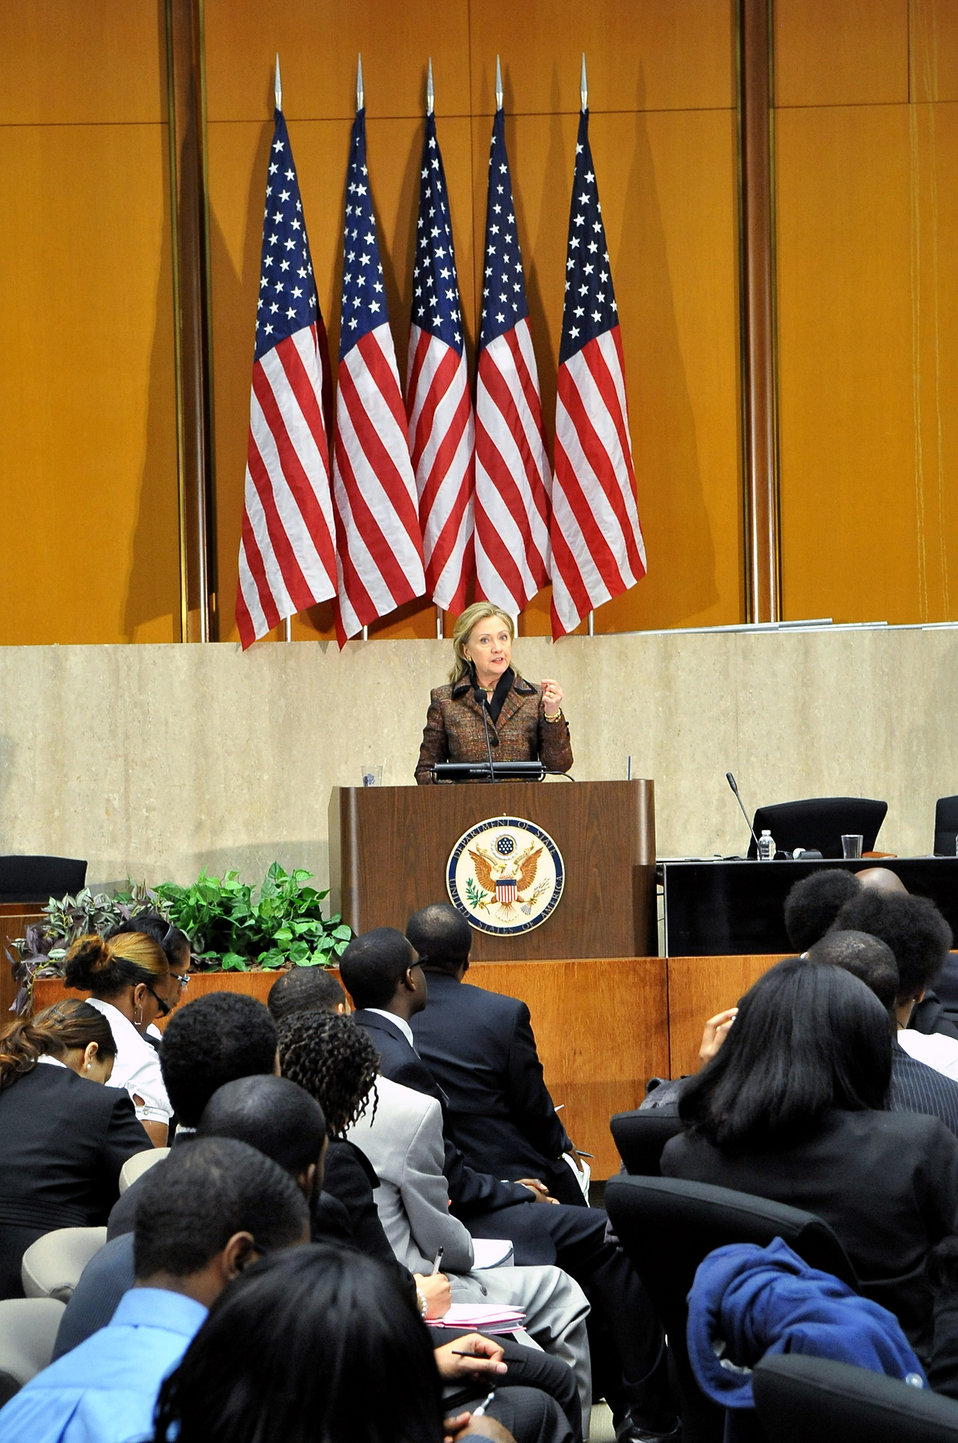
clinton-hbcu-2232011aSecretary Clinton Delivers Remarks at Foreign Policy Briefing

U.S. Secretary of State Hillary Rodham Clinton delivers remarks at a U.S. Foreign Policy Briefing for students from Historically Black Colleges and Universities in the Loy Henderson Auditorium at the U.S. Department of State in Washington, D.C., on February 23, 2011.